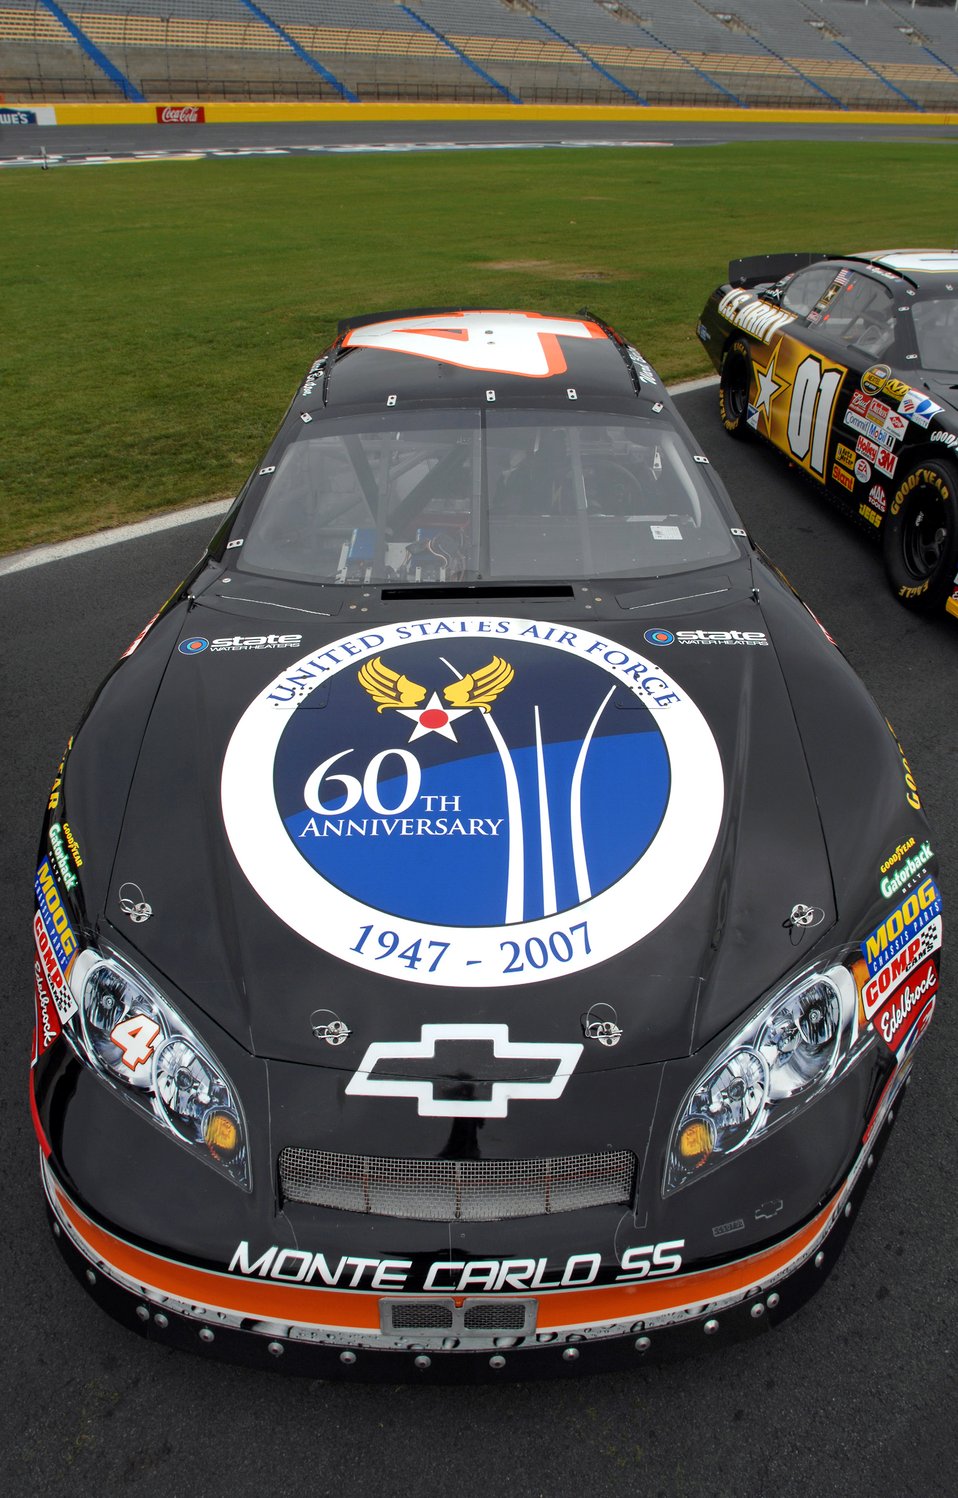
NASCAR salutes Air Force

The U.S. Air Force 60th anniversary logo is unveiled on the hood of NASCAR driver Ward Burton's State Water Heaters car during an unveiling ceremony May 8 at Lowe's Motor Speedway in Charlotte, N.C. The unveiling was in recognition of